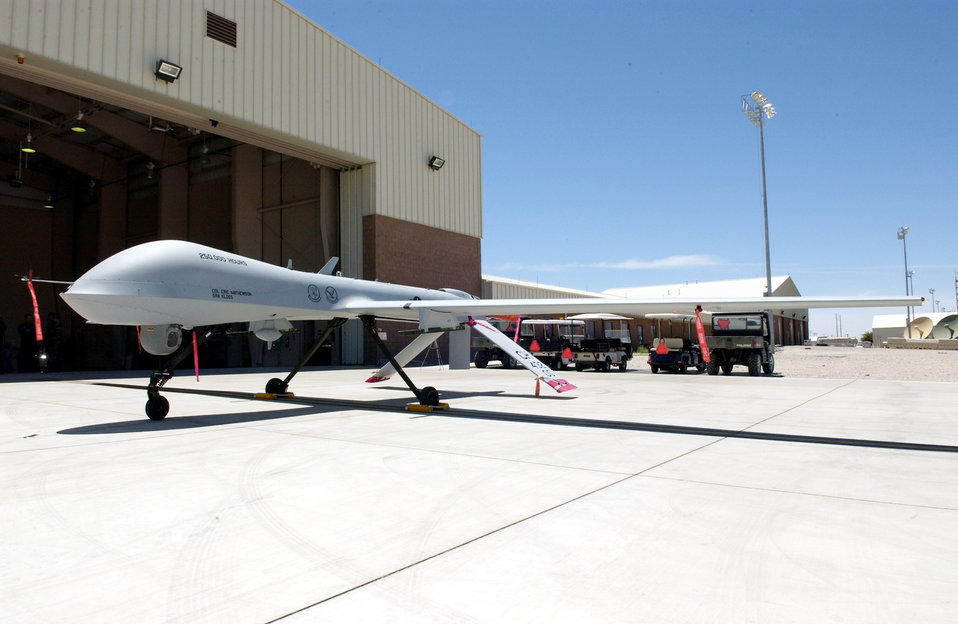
Predator passes 600,000 flight hours

Airmen of the 432d Air Expeditionary Wing surpassed the 600,000 flight hour mark in the MQ-1 Predator unmanned aircraft system Sept. 4 at Creech Air Force Base, Nev. The Predator's primary mission is interdiction and conducting armed reconnaissance against critical, perishable targets.